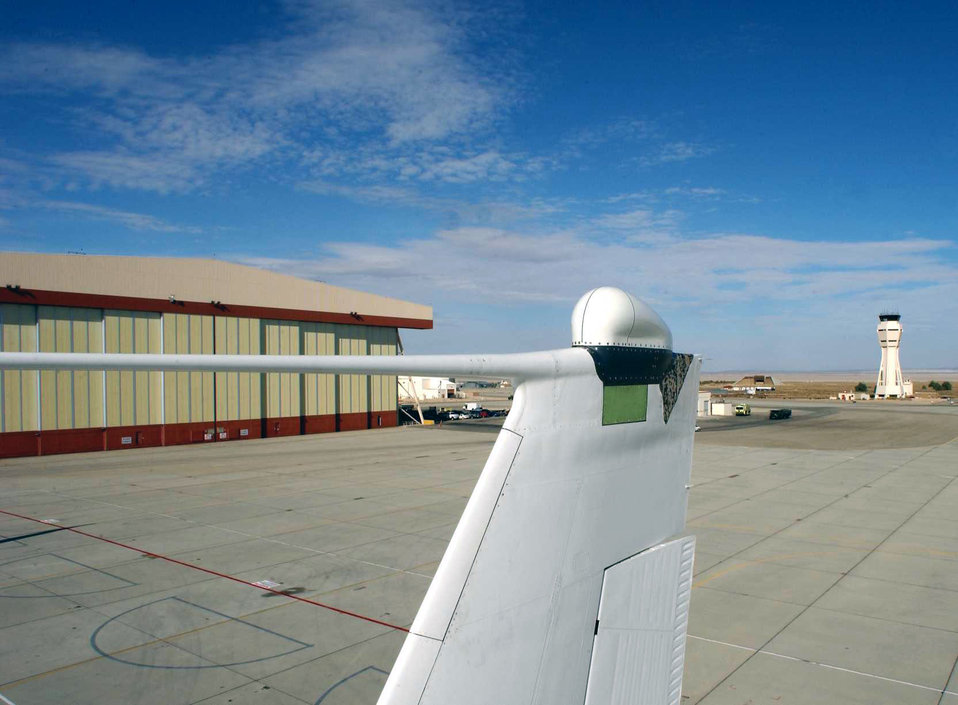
Speckled Trout tests LANs

EDWARDS AIR FORCE BASE, Calif. -- A C-135C Speckled Trout began six months of flight testing on the new local-area-network system recently. The antenna, located on the tail of the aircraft, is about the size a home television satellite dish.